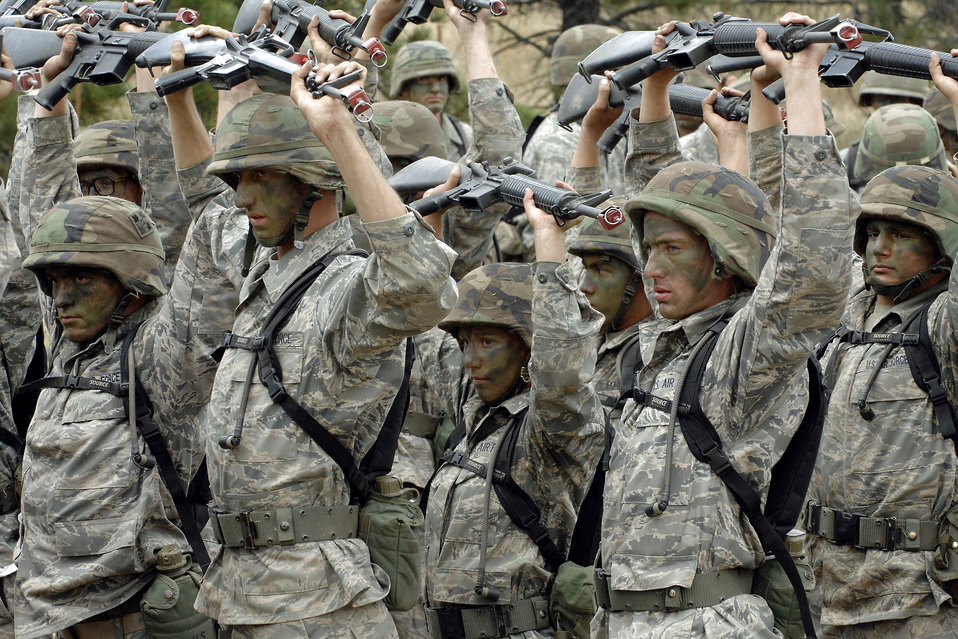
Operation Warrior

U.S. Air Force Academy basic cadets prepare to participate in Operation Warrior during basic cadet training in the Jacks Valley training area July 23. Operation Warrior trains cadets on basic individual and team ground combat skills.